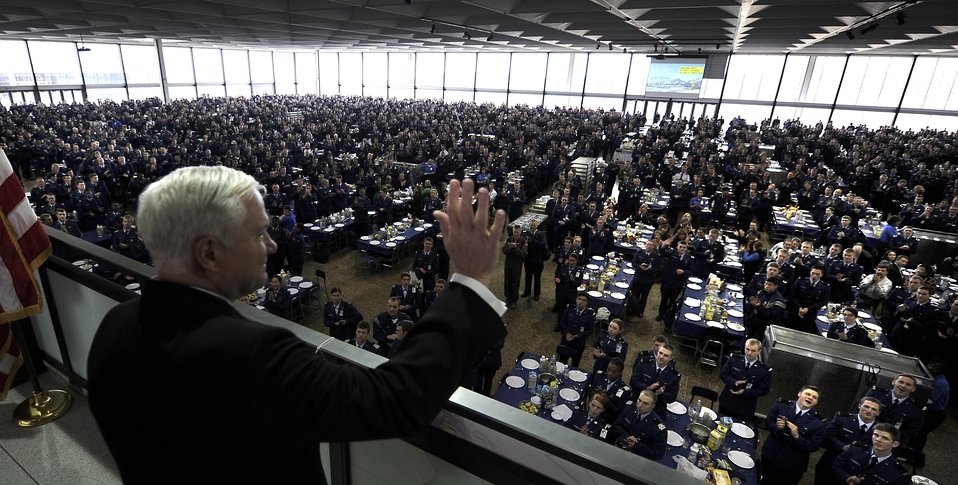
Gates urges new Air Force leaders to think creatively

Defense Secretary Robert M. Gates waves to Air Force Academy cadets March 4, 2011, during lunch in Mitchell Hall after teaching classes as part of the Capstone Seminar at the Air Force Academy in Colorado Springs, Colo.